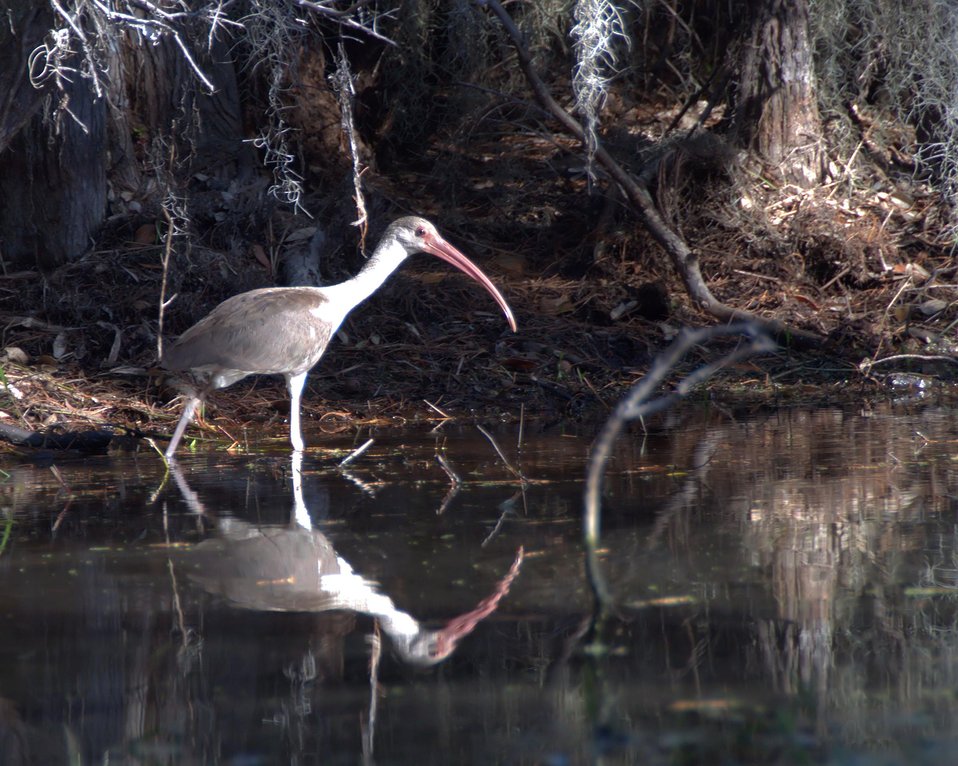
Ibis along Canal Run

Okefenokee National Wildlife Refuge, GA.